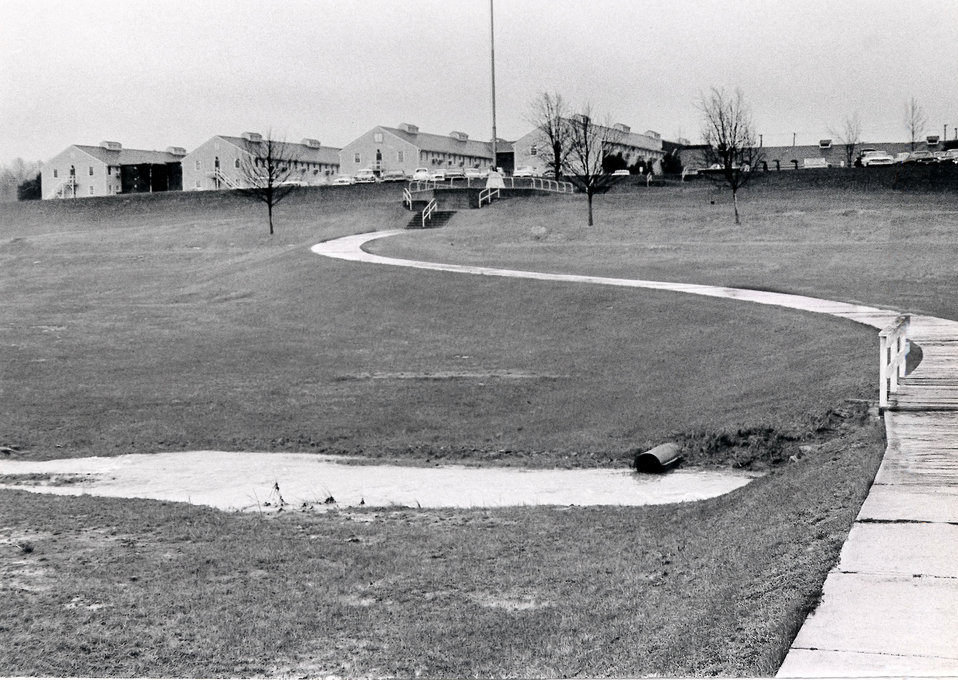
AEC Adm. Proposed Site for New Bldg. Oak Ridge

65-130 DOE photo by Ed Westcott 3-25-1965 Oak Ridge Tennessee